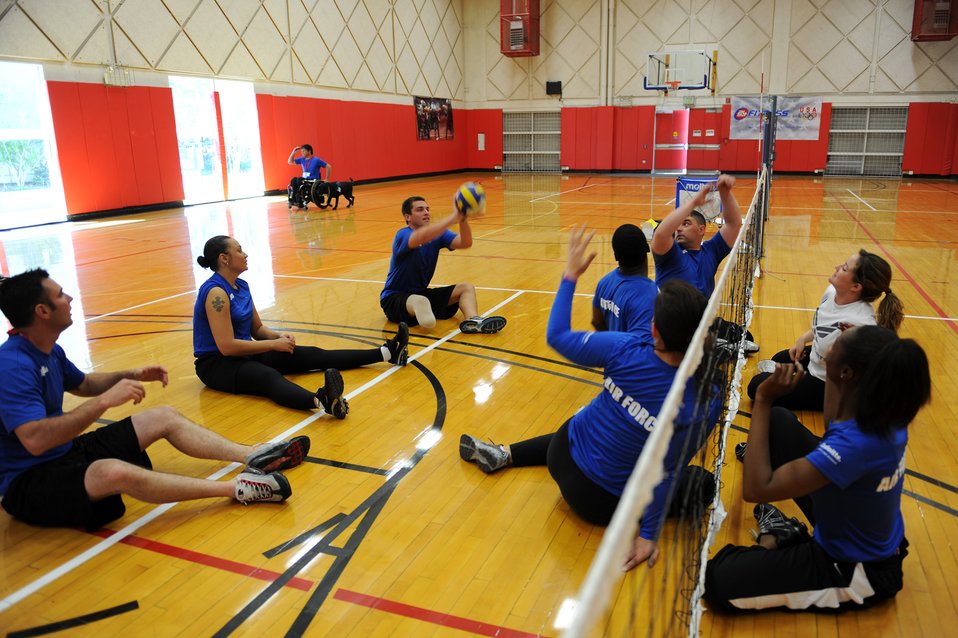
Warrior Games AF Volleyball Practice

Second Lt. Ryan McGuire hits the ball during volleyball practice at the Warrior Games May 10, 2010 at the Olympic Training Center, Colorado Springs. The Warrior Games competition began May 10 and finishes on May 14, 2010 at the U.S. Olympic Training Center in Colorado Springs.